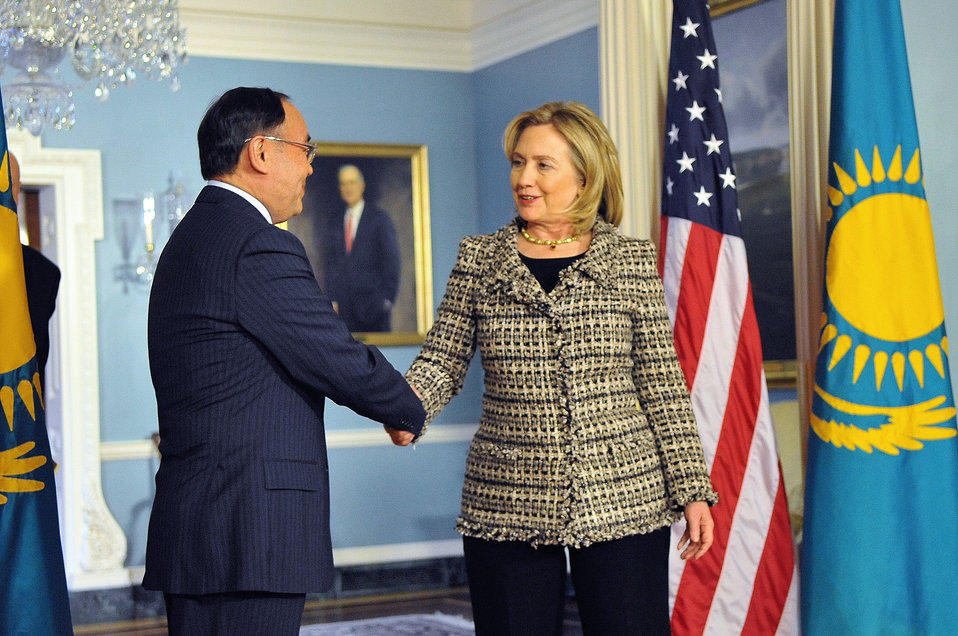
Secretary Clinton Shakes Hands With Kazakhstan Foreign Minister Saudabayev

U.S. Secretary of State Hillary Rodham Clinton shakes hands with Kazakhstan Foreign Minister Kanat Saudabayev at the U.S. Department of State in Washington, D.C., on January 25, 2011.